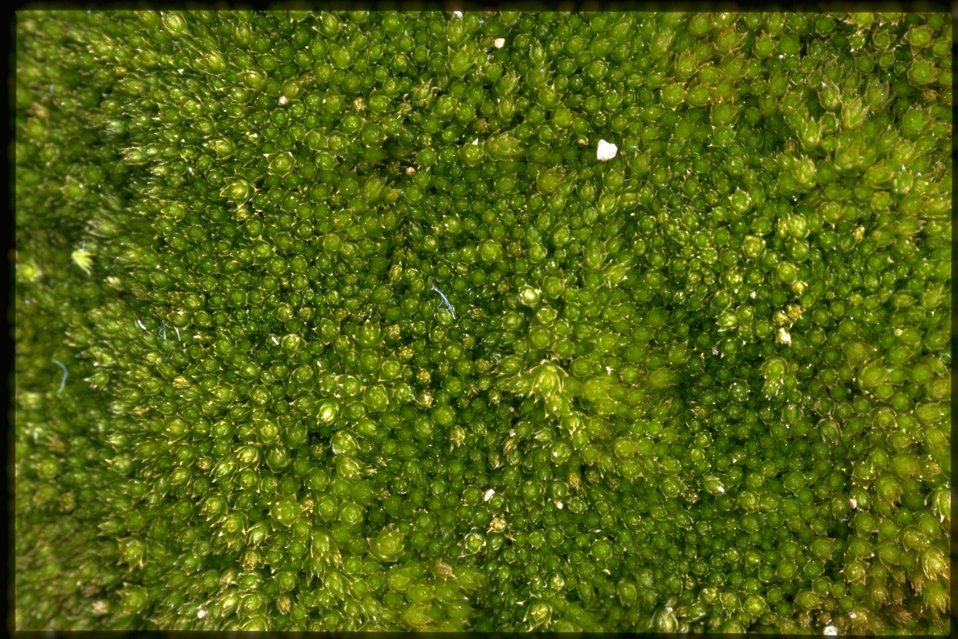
Closeup shot of Moss.